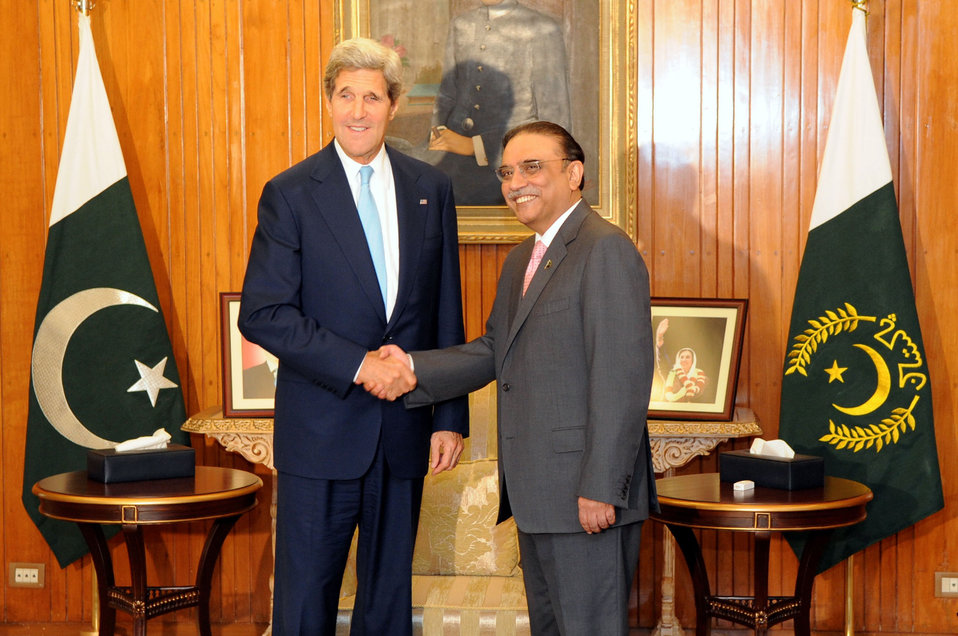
Secretary Kerry Meets With Pakistani President Zardari

U.S. Secretary of State John Kerry meets with Pakistani President Asif Ali Zardari during a visit to Islamabad, Pakistan, on August 1, 2013.